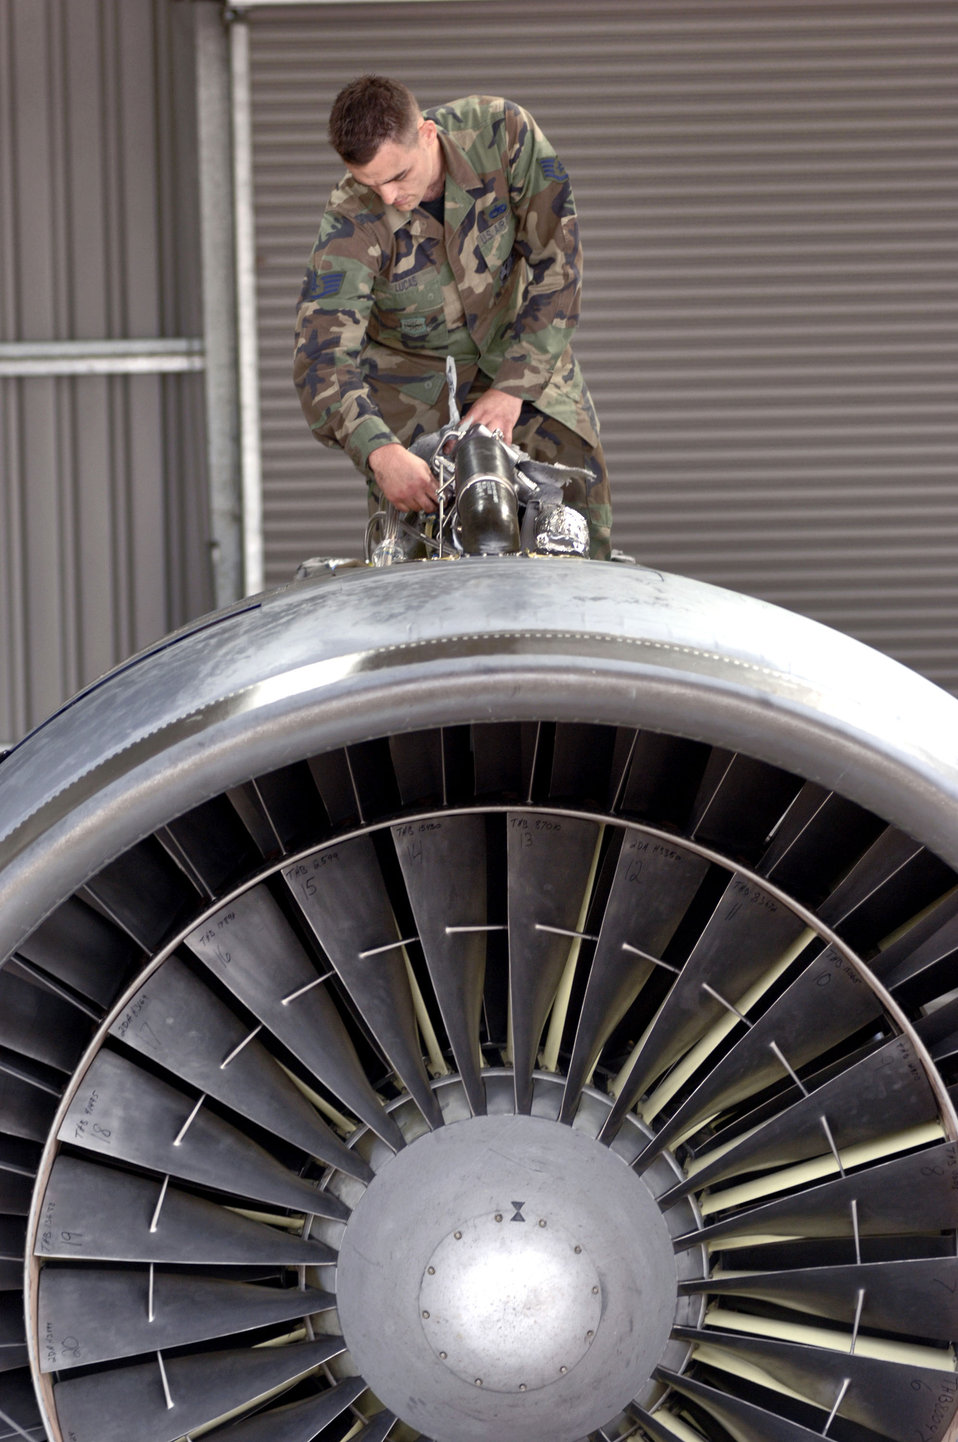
Aerial port Airmen make own training opportunities

Staff Sgt. Erik Lucas checks components atop a C-5 Galaxy turbofan engine at Royal Air Force Mildenhall, England, on July 31. The sergeant is an engine manger with the 727th Air Mobility Squadron. Each engine produces 43,000 pounds thrust, weighs 7,900 pounds and is nearly 27 feet long.